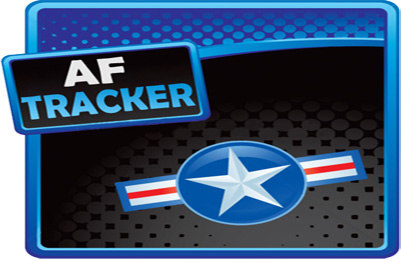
Airman develops PT calculator app

AF Tracker is an application available through iTunes that allows Airmen to calculate their fitness test scores on their smart phone or mp3 player. Senior Airman Julio Medina, a security forces member with the 6th Space Warning Squadron, created the application.